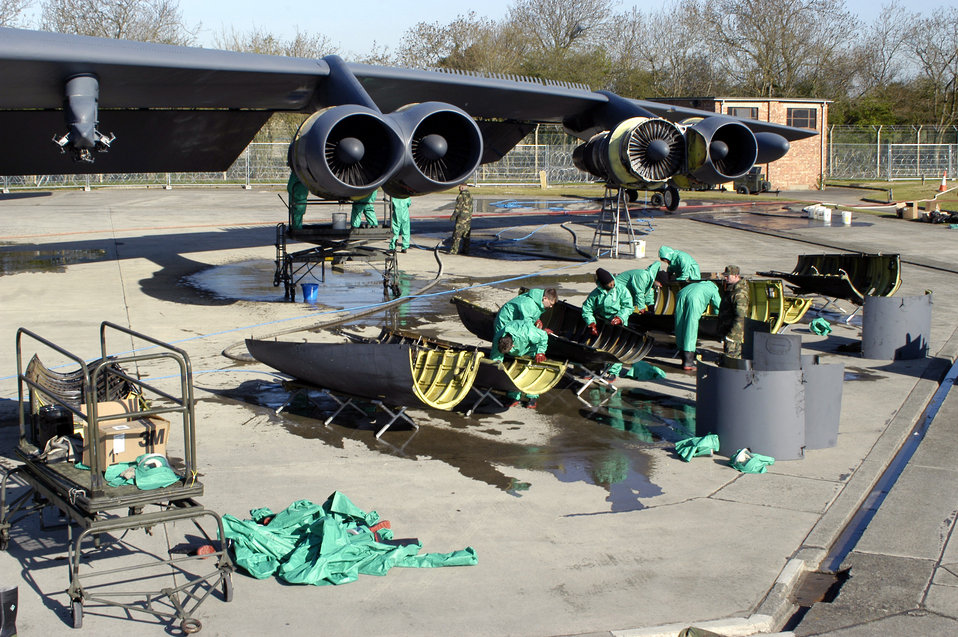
Buff bath

OPERATION IRAQI FREEDOM -- A maintenance crew begins the process to wash the 159-foot long B-52 Stratofortress bomber April 7 at a forward-deployed location. More than a dozen workers took six hours to clean oil, grease and dirt off the four-decade old airplane, which is part of the coalition bombing effort in Iraq.